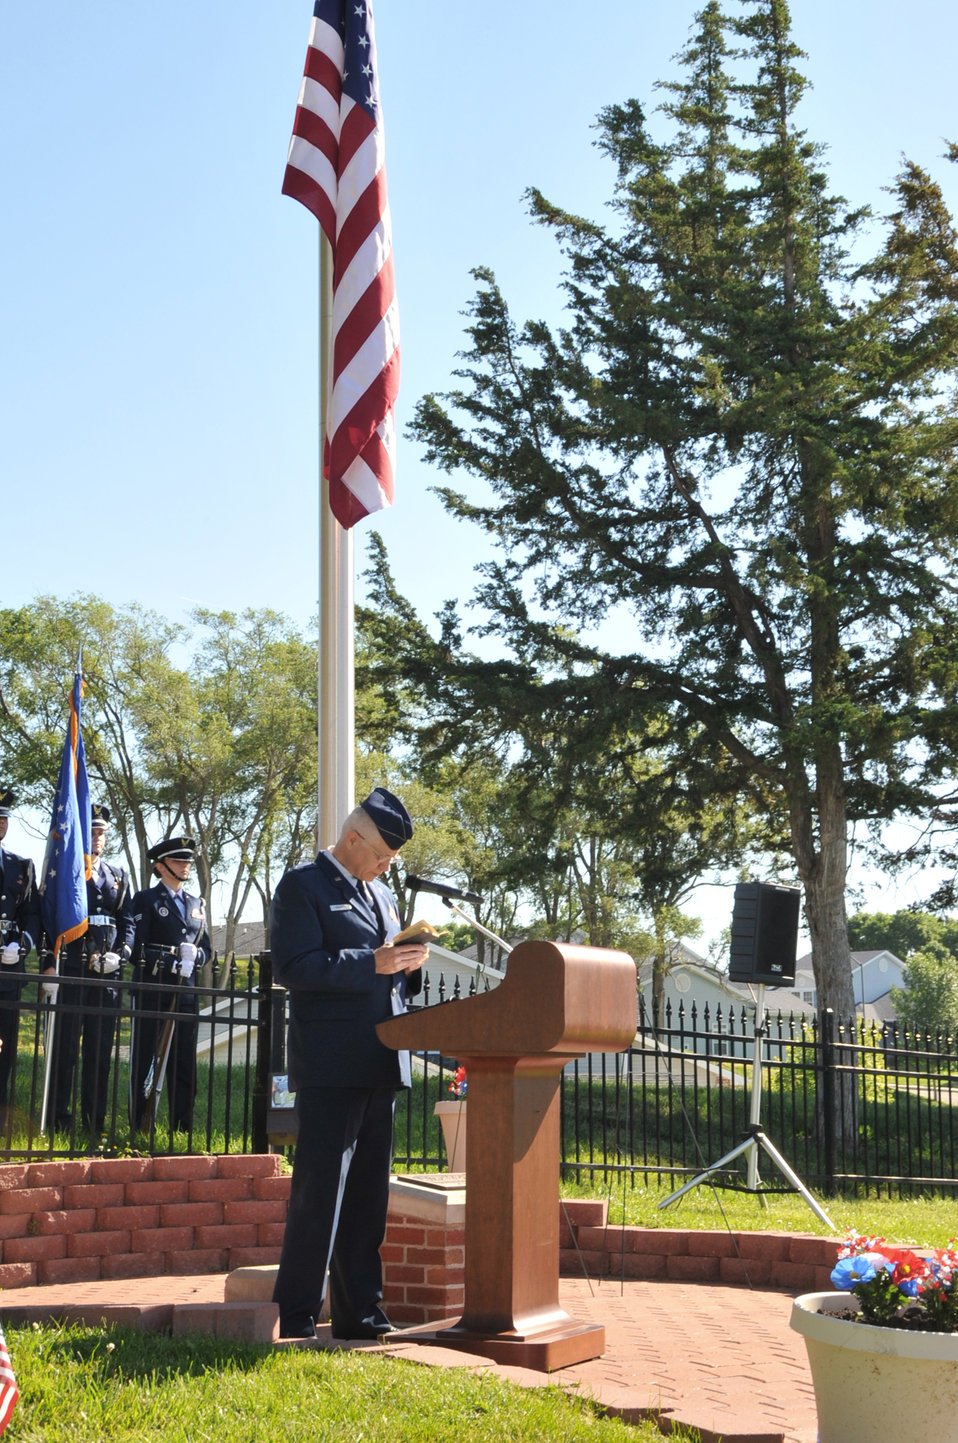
Chaplain (Col.) Carl Swanson

Underneath the U.S. flag Chaplain (Col.) Carl Swanson reads a prayer to honor all service members who made the ultimate sacrifice while serving their country during a Memorial Day ceremony at the base cemetery May 31, 2010, at Offutt Air Force Base, Neb. Chaplain Swanson is the 55th Wing chief chaplain.